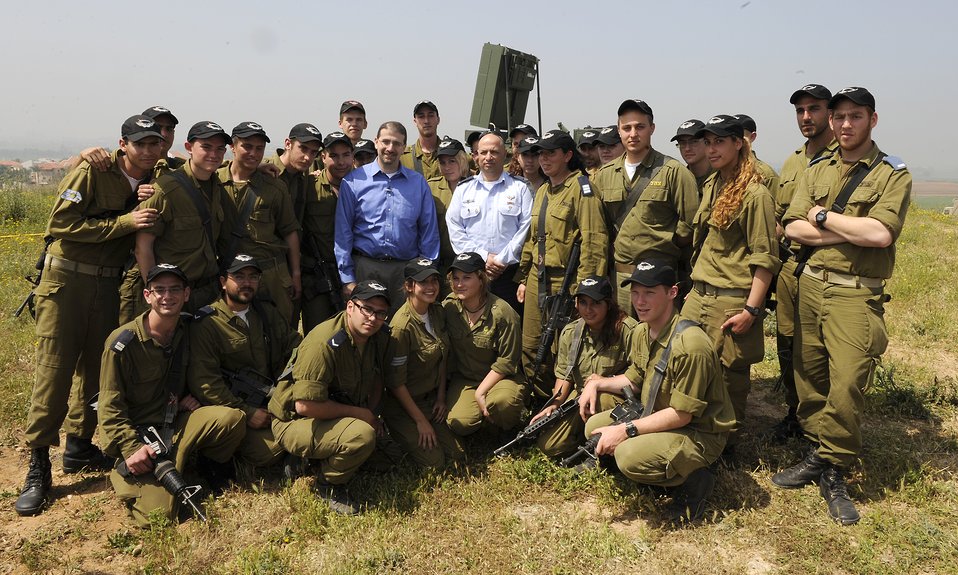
Ambassador Shapiro Meets With Israeli Soldiers

U.S. Ambassador to Israel Daniel Shapiro meets with Israeli Air Force Air Defense Forces Commander Brig Gen. Doron Gavish, battery commander Capt. Revital Uzan, and battery soldiers during his visit to the site of the newly-deployed Iron Dome battery in southern Israel on April 5, 2012.